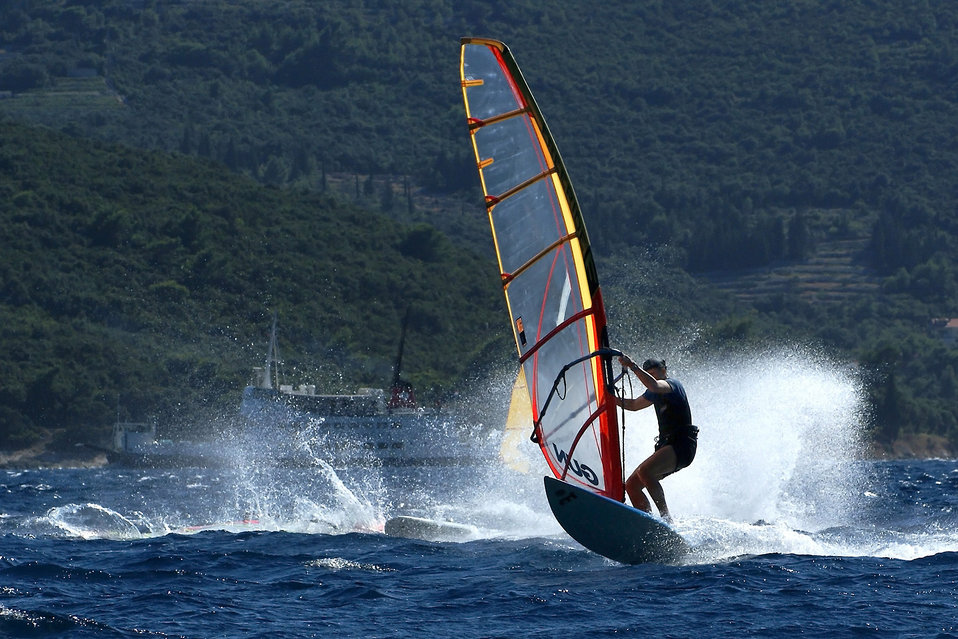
Two in the neck

Windsurfing.